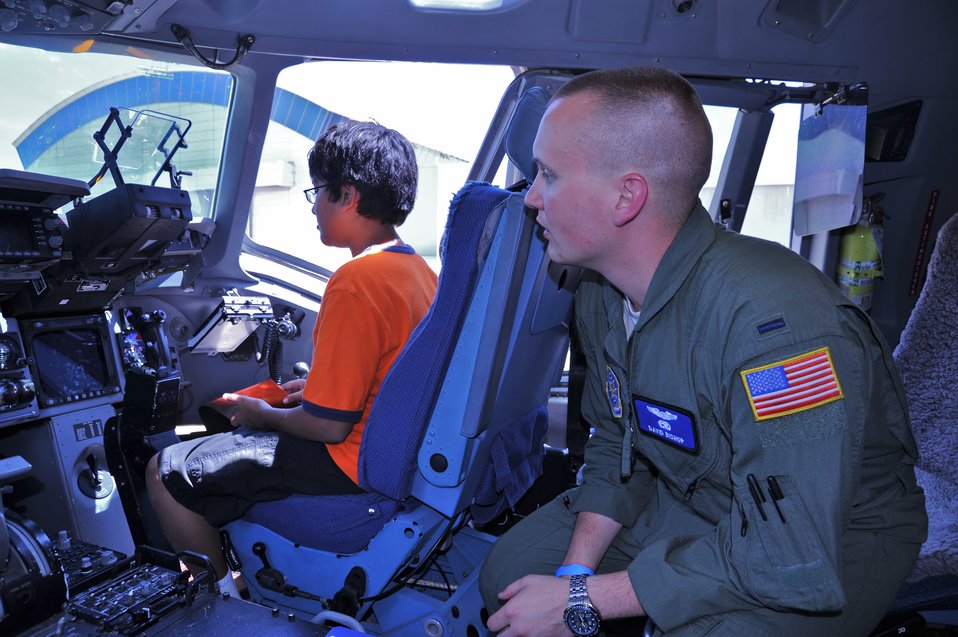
Heads-up to a young pilot

1st Lt. David Bishop explains the heads-up display of a C-17 Globemaster to Kiron Khashnobish, 12, at